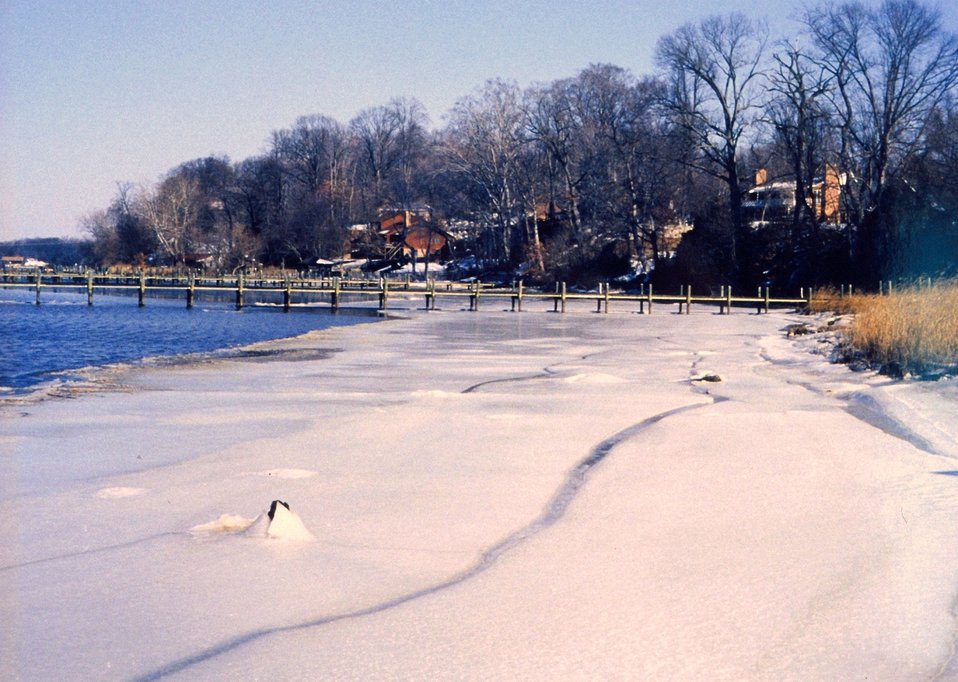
Winter and ice along the Patuxent River.